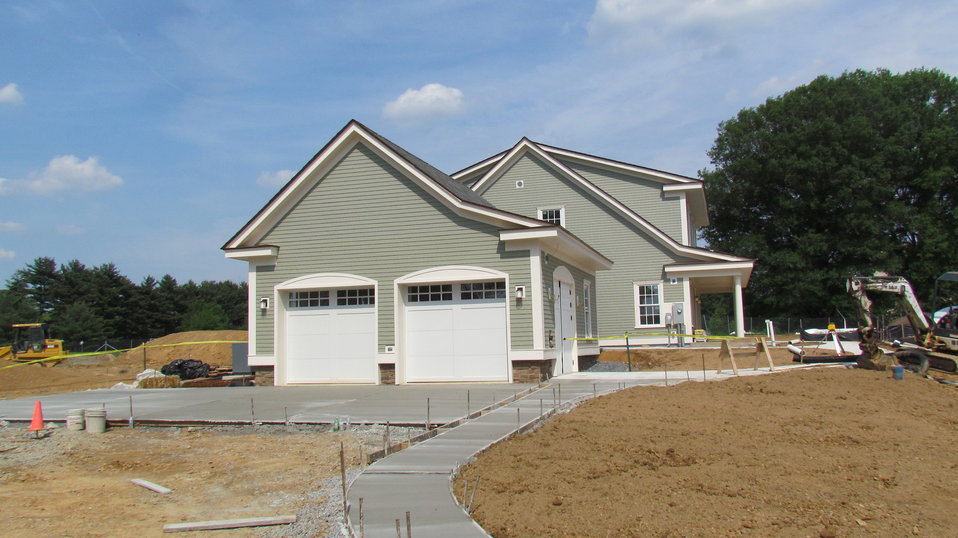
Concrete work associated with driveway nearing completion.